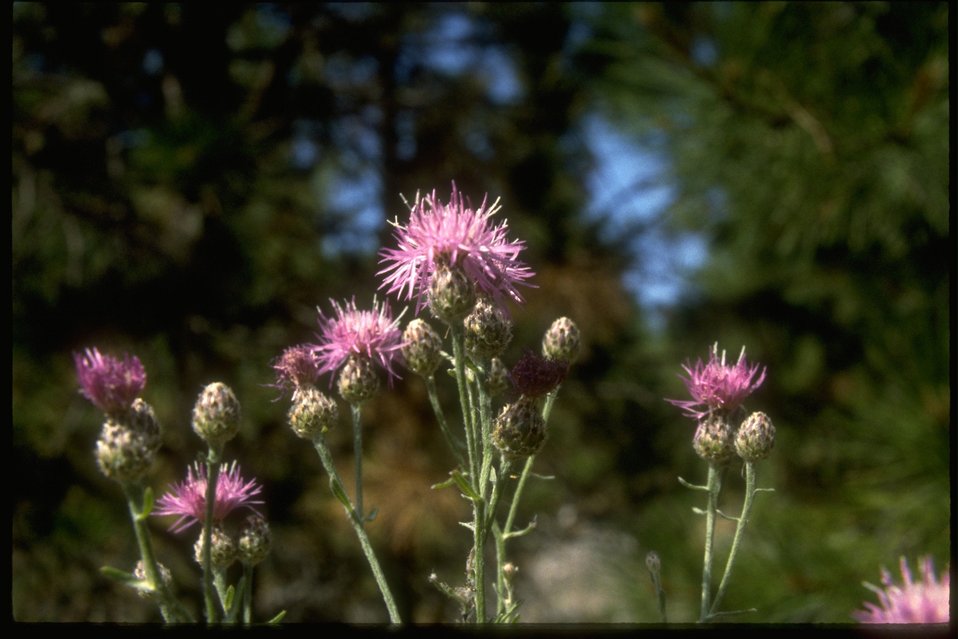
Undetermined.